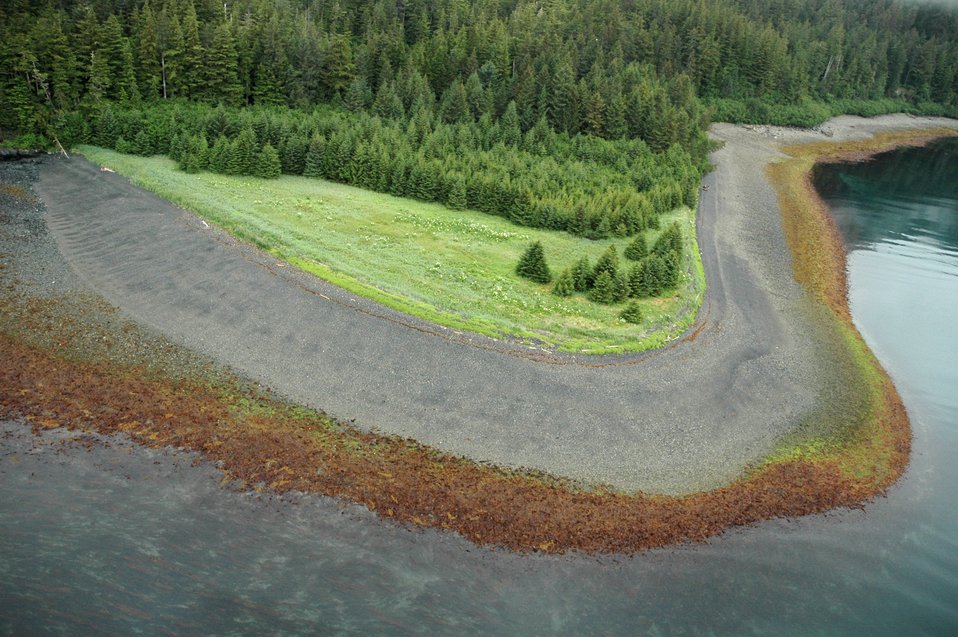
Aerial photograph.An Elrington Island Beach showing different flora zones in both the intertidal zone and on land.